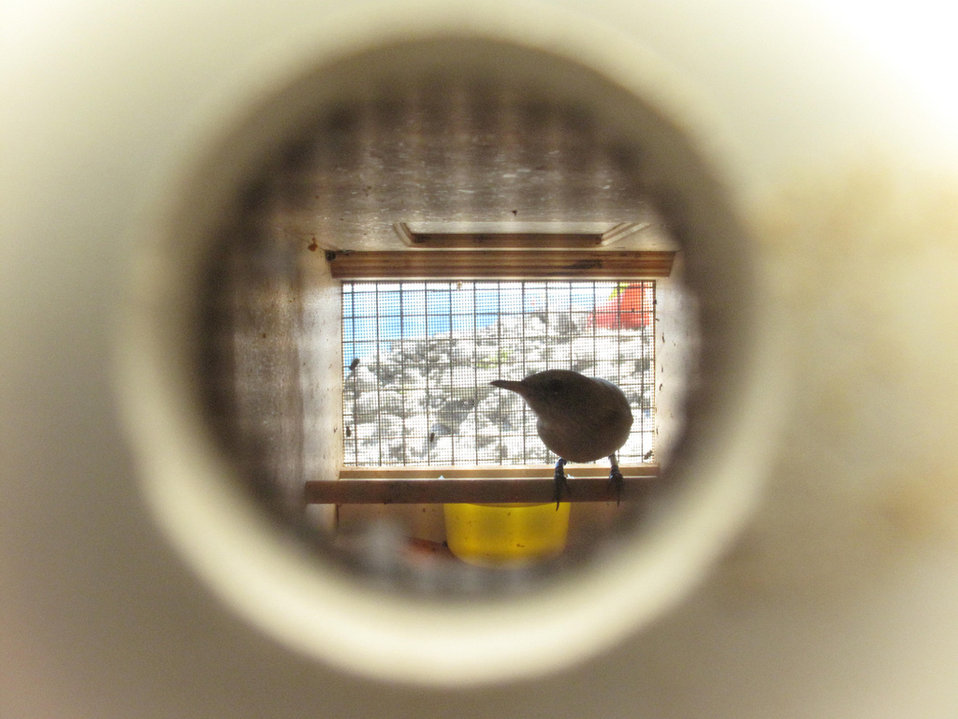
millerbird in holding cage

Nihoa Island
Sept. 6, 2011